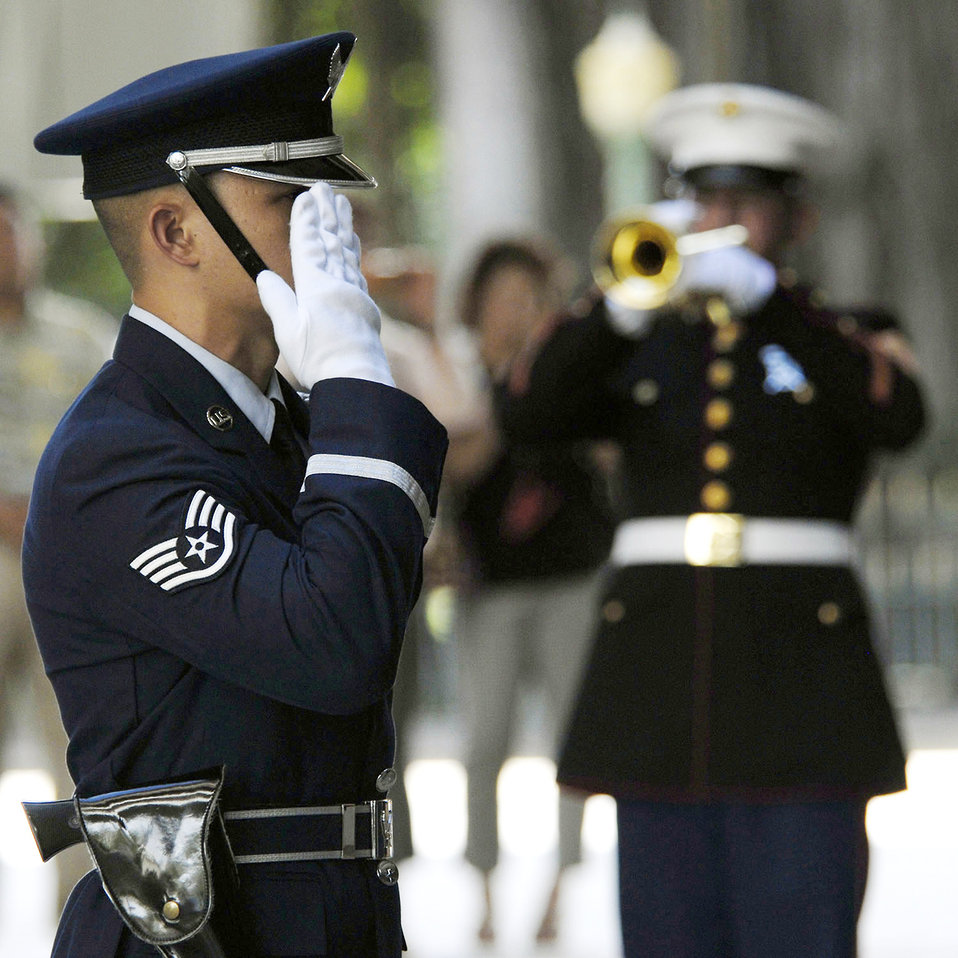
Hawaii officials honor fallen war heroes

A member of the Joint Base Hickam-Pearl Harbor, Hawaii, honor guard salutes during a rifle volley and the playing of